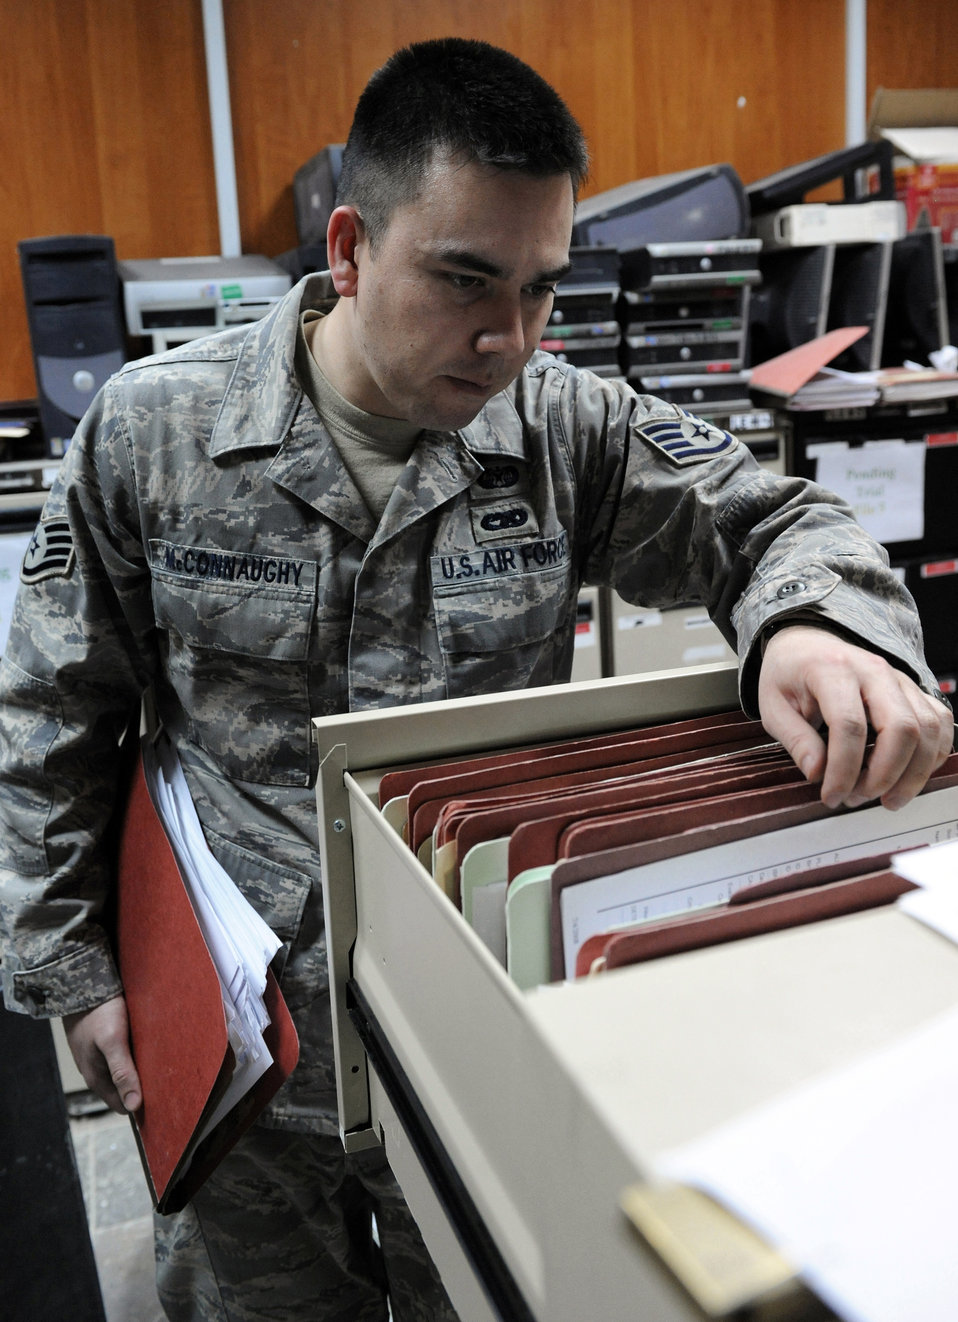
Airmen support the Central Criminal Court of Iraq

Staff Sgt. Adam McConnaughy sifts through case files March 3 in Baghdad, Iraq. Sergeant McConnaughy is a paralegal for the 732nd Central Criminal Court of Iraq. He is a native of Sacramento, Calif., and is deployed from MacDill Air Force Base, Fla.